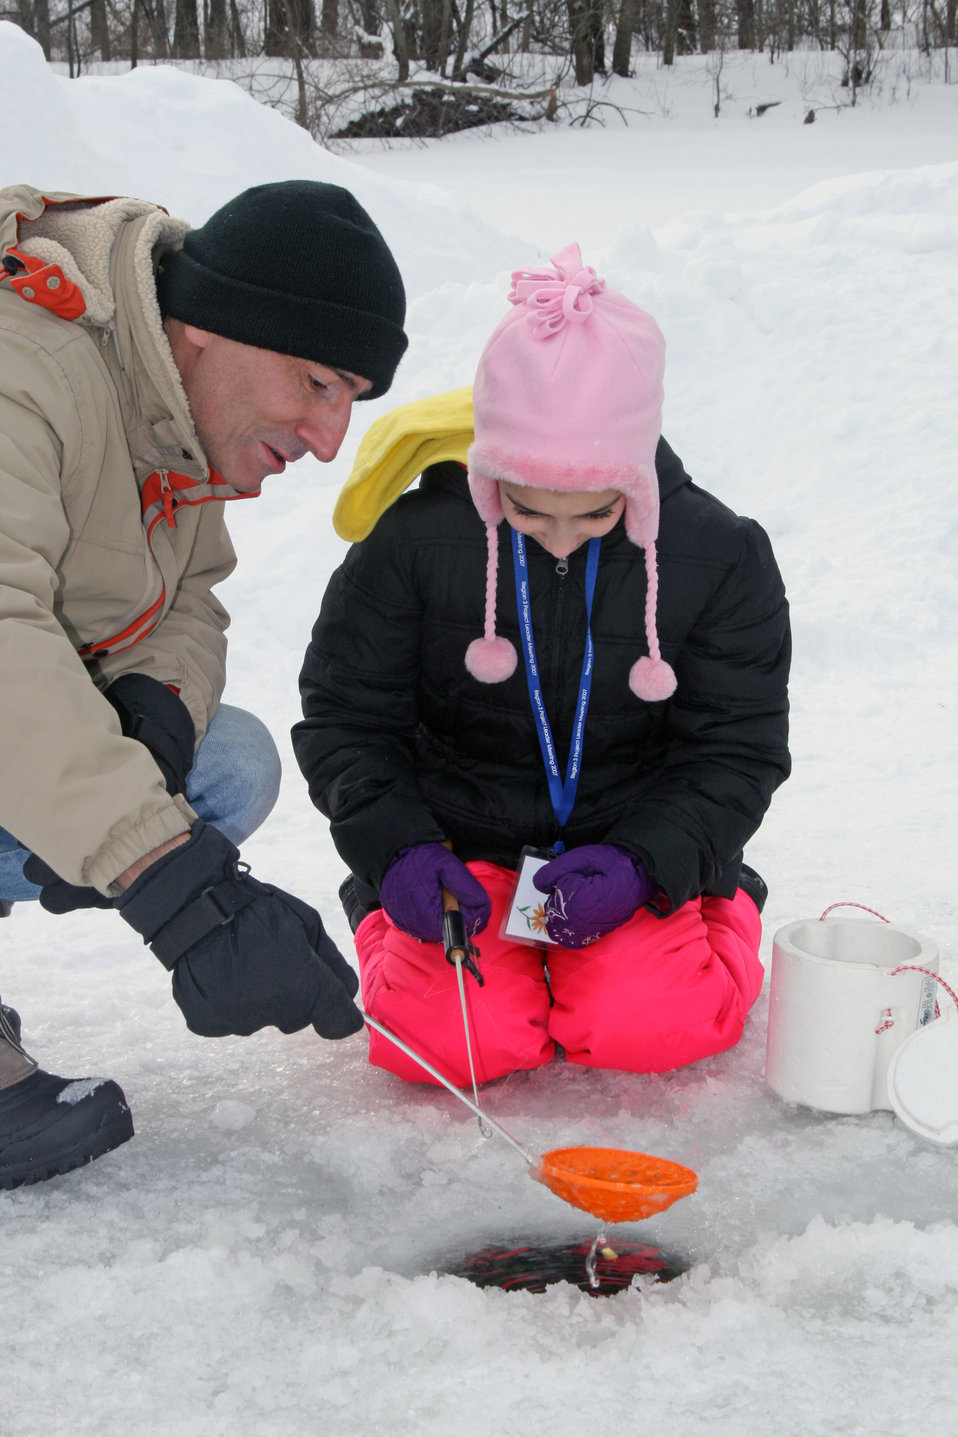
Patience

A young angler waits patiently for a bite during the annual youth ice fishing event held on the Upper Mississippi River National Wildlife and Fish Refuge – Winona District.